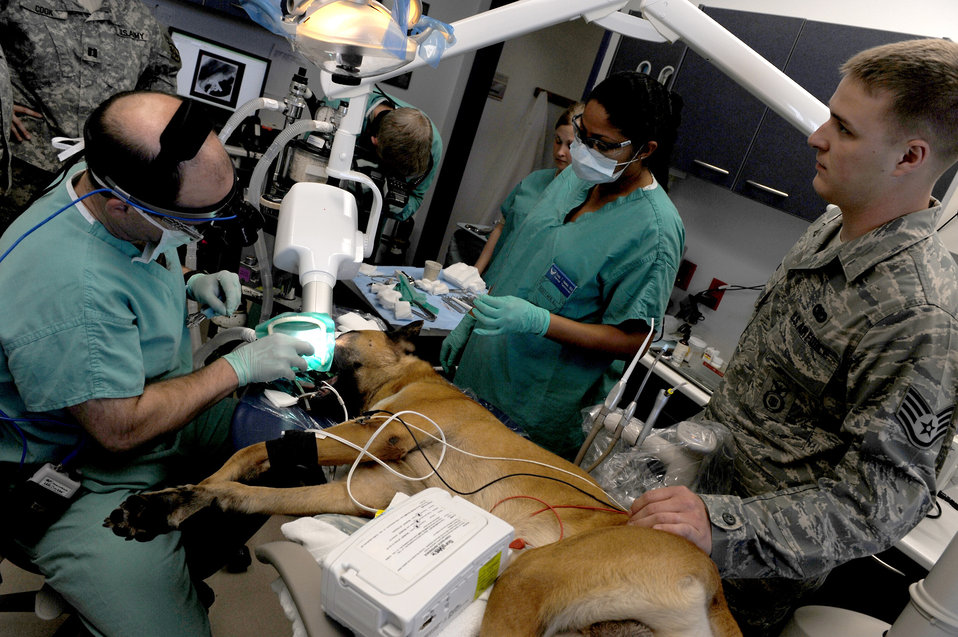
An Airman's best friend

Jack, a military working dog assigned to the 375th Security Forces Squadron, undergoes root canal surgery April 21, 2011, at the dental clinic at Scott Air Force Base, Ill. His handler, Staff Sgt. Andrew Kolis (right), was by his side the entire time.